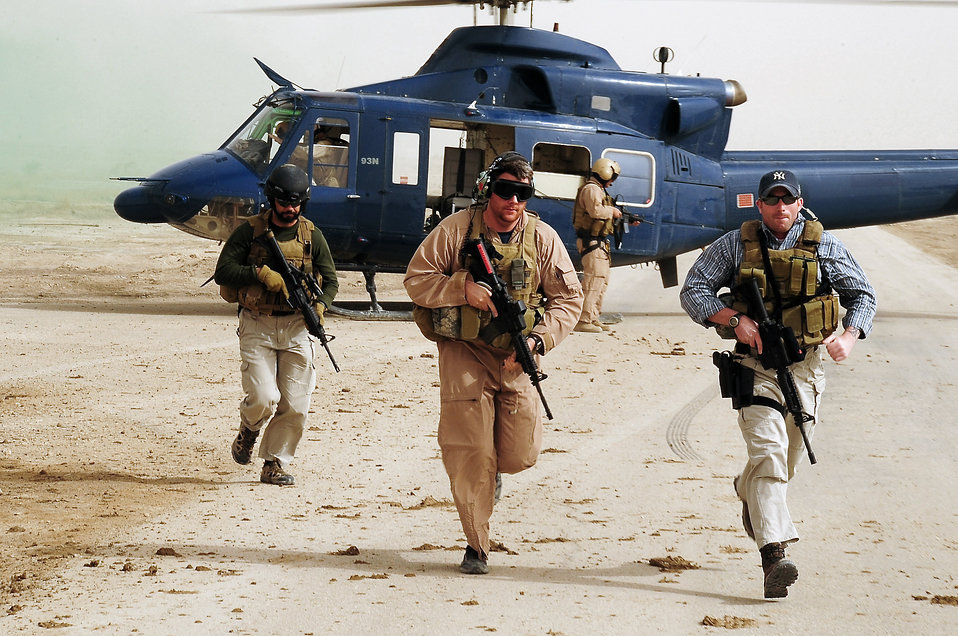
Testing rescue capabilities

State Department security agents race to secure the scene and rescue victims of a mock attack during a joint training exercise Feb. 28 at Ali Base, Iraq. The exercise tested Air Force, Army and DOS search and rescue procedures after a